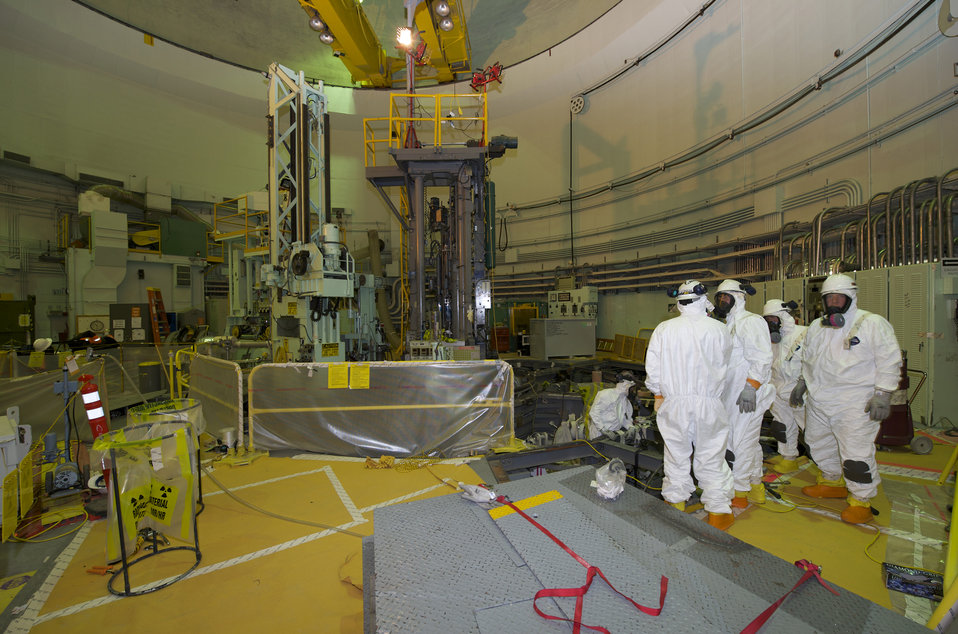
Idaho Site Tackles Recovery Act Work to Help Protect Aquifer, Meet State Requirements

Nearly $470 million from the Recovery Act is accelerating the cleanup of six decades worth of radiological and chemical contamination at the Idaho site — benefiting eastern Idaho residents and helping protect the nearby Snake River Plain Aquifer.